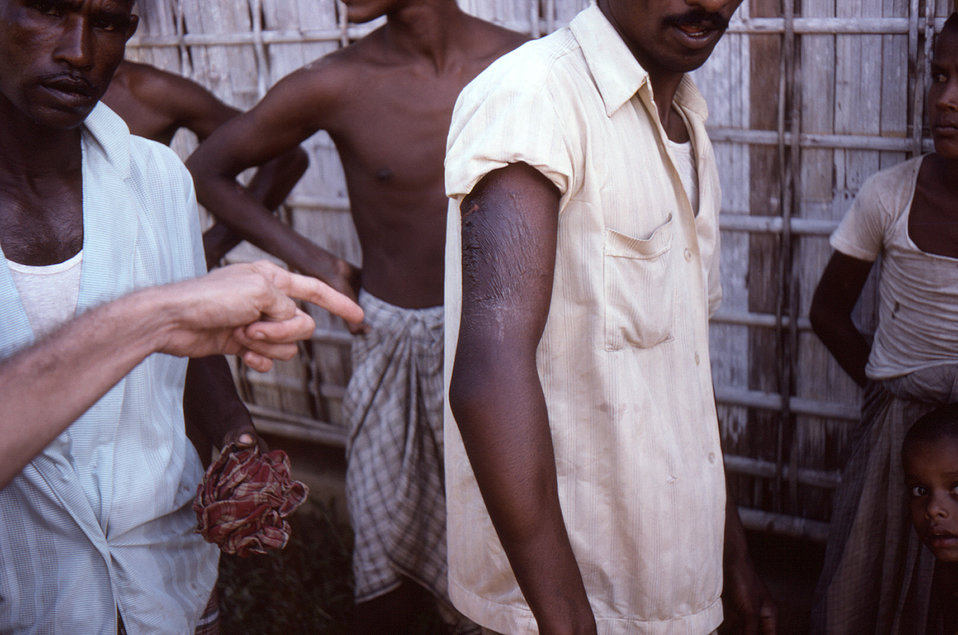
Photographed in the Sylet District of north-eastern Bangladesh, this man presented with a skin reaction to a smallpox vaccination. He was advised to boil neem leaves, Azadirachta indica, in water, and use the fluid to create compresses to be applied directly to his swollen, right upper arm.